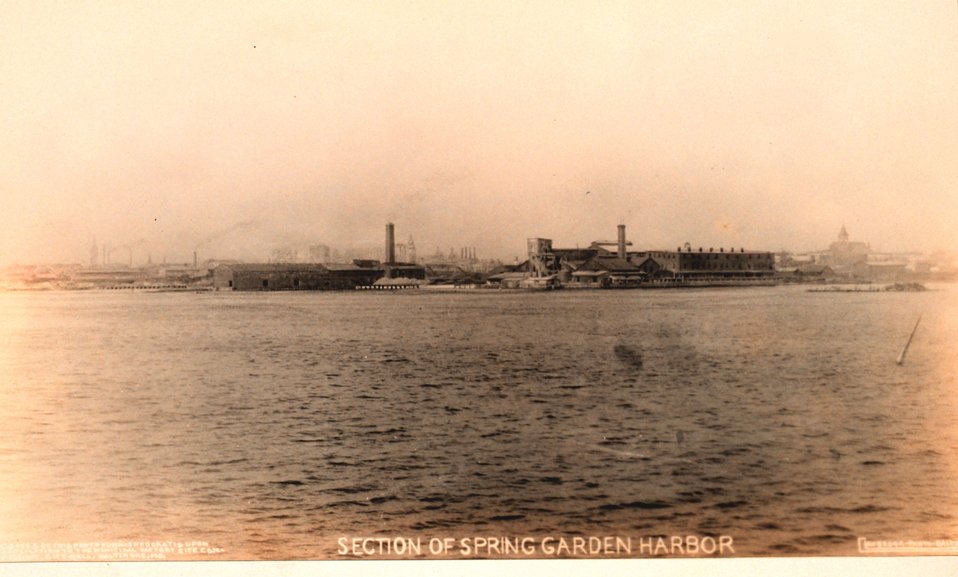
Spring Garden Harbor section of Baltimore Harbor. Accompanied as loose photos in the 'Monthly Journal of the Engineers' Club of Baltimore' for February 1914.